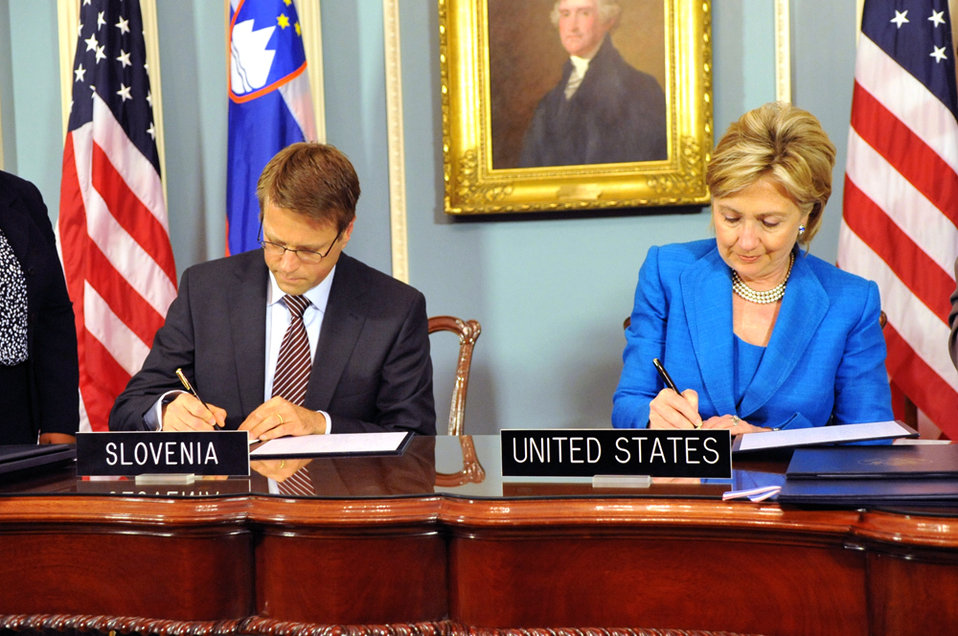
U.S.-Slovenia Signing Ceremony

Secretary Clinton participates in a signing ceremony of Protocols of Exchange of Instruments of Ratification for the U.S.-Slovenia Mutual Legal Assistance Protocol and the U.S. Slovenia Extradition Treaty, with His Excellency Samuel Zbogar, in the Treaty Room of the U.S. Department of State in Washington, DC July 29, 2009.